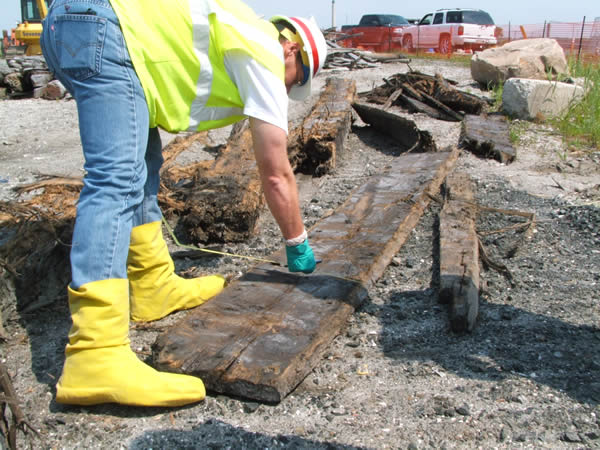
August 2009, Historical detective work

By measuring and documenting the size, dimensions and type of wood, archeaologists can better determine the most likely type of ship this was, hopefully where it came from and why it ended up in the northern area of New Bedford Harbor.